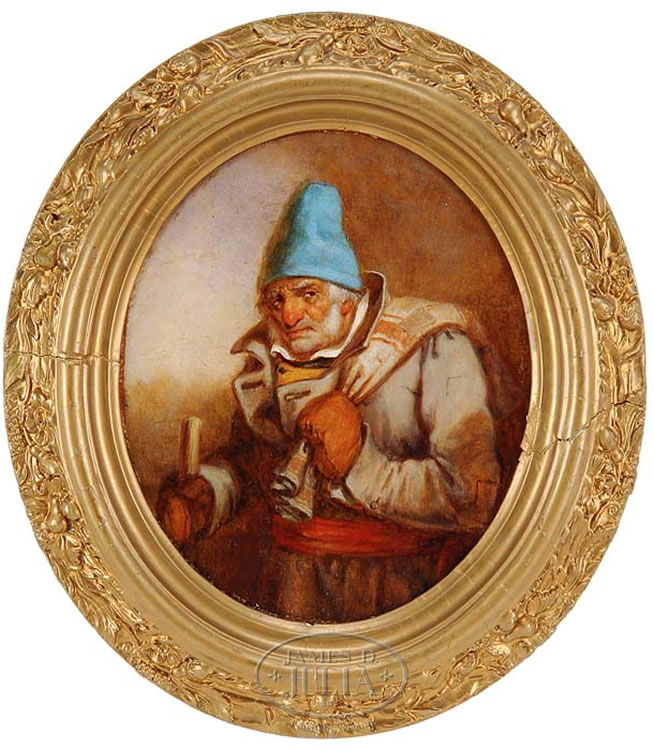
The Trapper, oil painting by , 11 x 9.25 in.